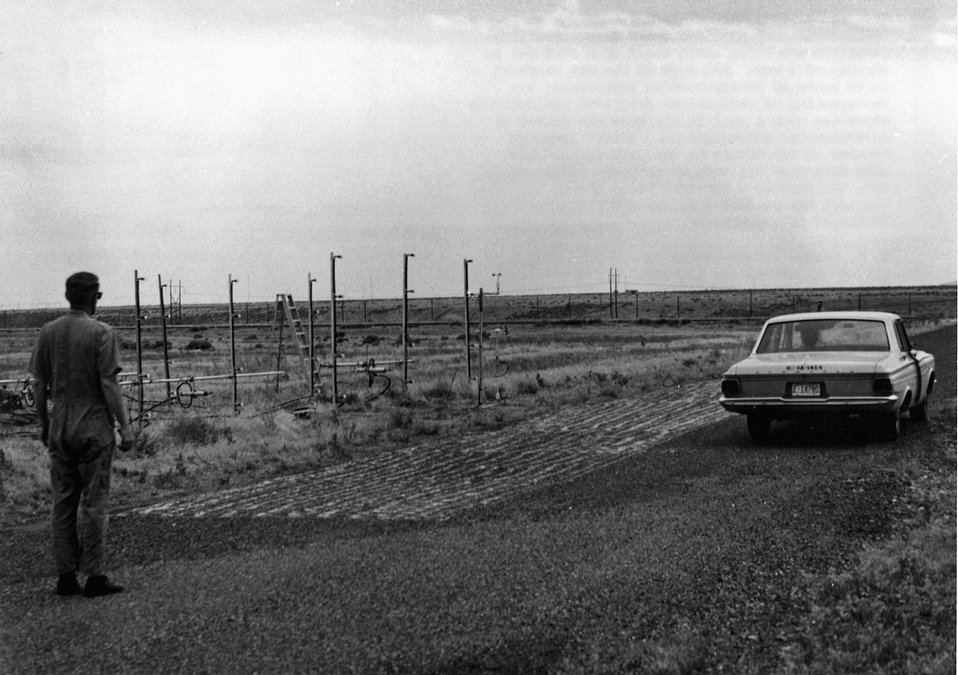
Shown is a field experiment in which inert (nonradioactive) particles are being moved about on a road due to passage of a car. c. 1972